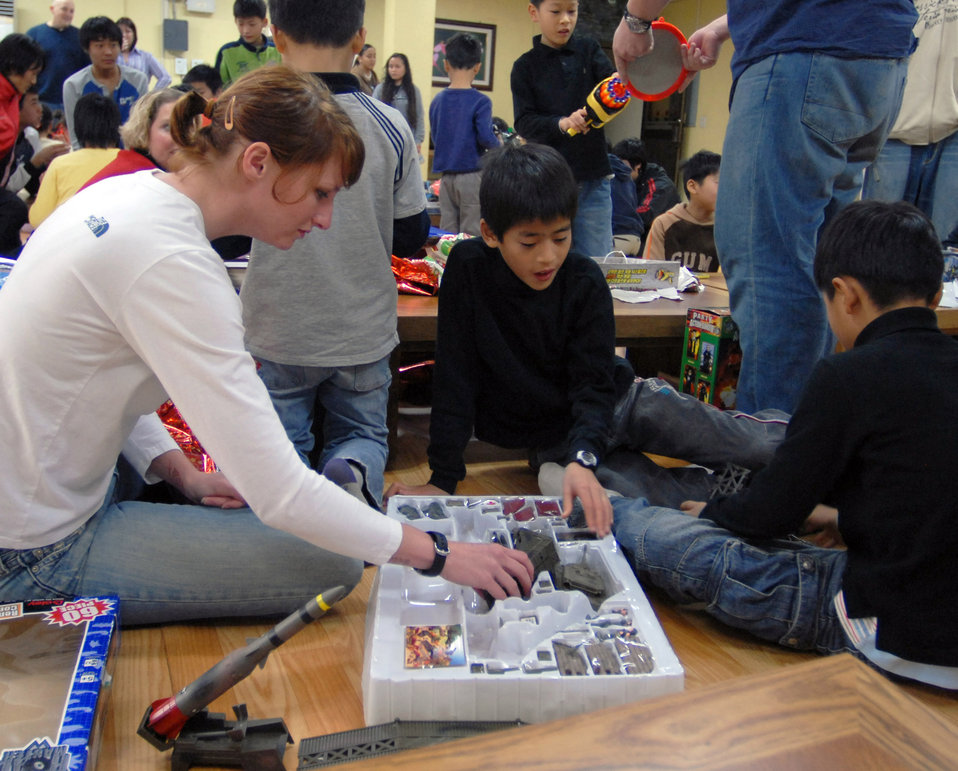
Airmen deliver Christmas to South Korean orphanage

Tech. Sgt. Catherine Lobbestael plays with children from Kae Jong orphanage during an Airmen Committed to Excellence Christmas Party Dec. 15 in Kae Jong, South Korea. Sergeant. Lobbestael along with other Airmen from Kunsan Air Base, South Korea, spent the afternoon handing out gifts, coloring, eating, and playing with children. The Airmen donated various gifts to include beanie babies and a PlayStation 2.